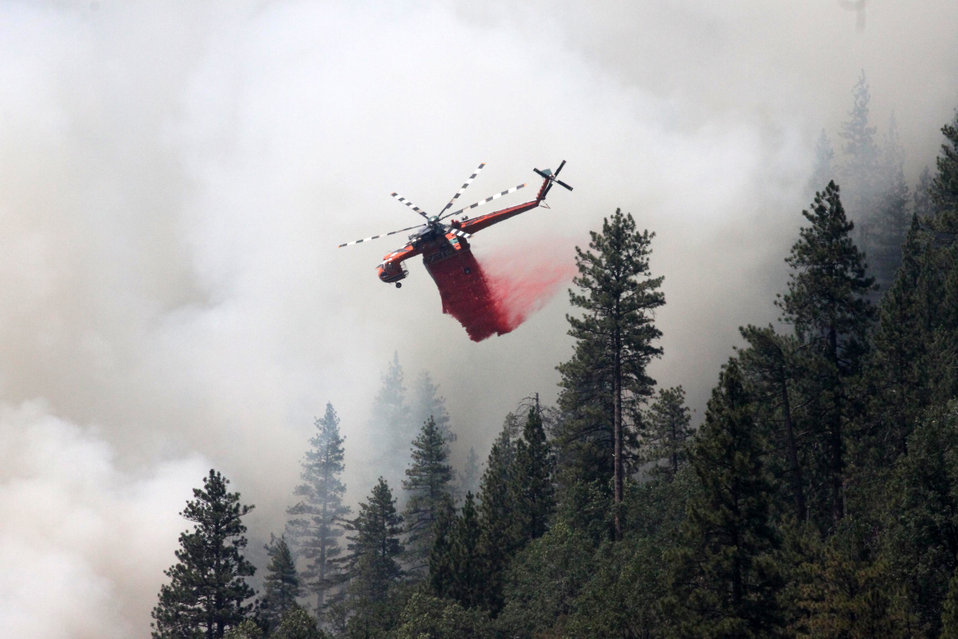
A helicopter drops fire retardant on the Aspen Fire. The Aspen Fire in the Sierra National Forest near Big Creek, CA began on Jul. 22, 2013 by lightning and has consumed approximately 1, 400 acres and is approximately 20% contained.